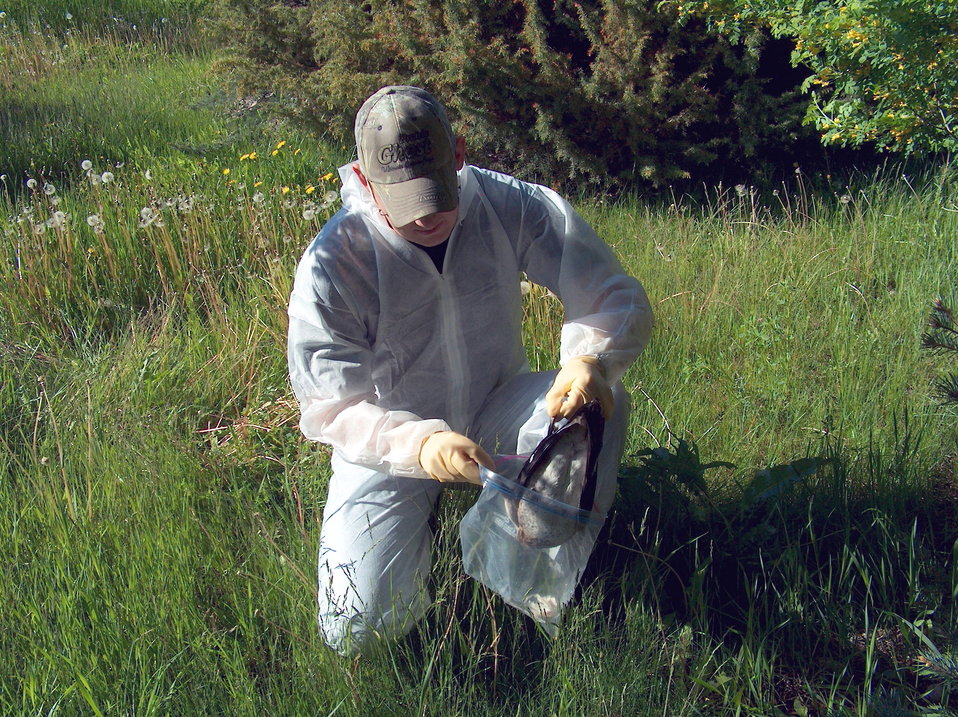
Mortality Investigation

Mike Borgreen of the Wildlife Health Office collects a dead bird for diagnostic testing. Submission of carcasses for diagnostic testing is important for understanding causes of mortality and ways to manage them.